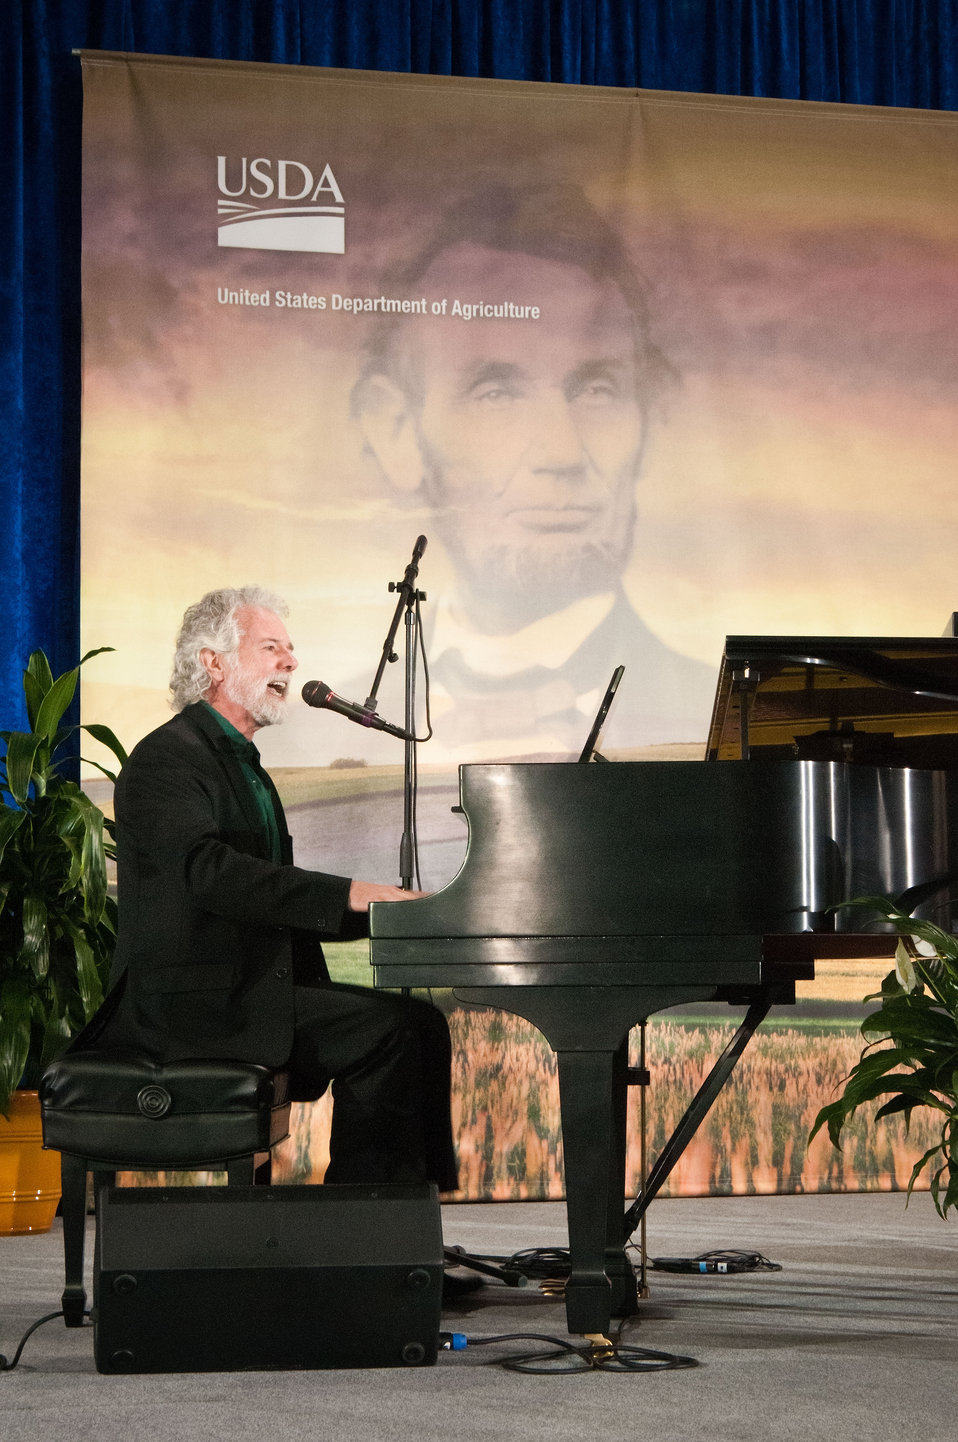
Chuck Leavell Rolling Stones keyboardist, conservationist and Georgia tree farmer played the George Harrison tune, “Here Comes the Sun” at the United States Department of Agriculture's 150th Anniversary celebration in Washington, DC Tuesday, May 15, 2012.